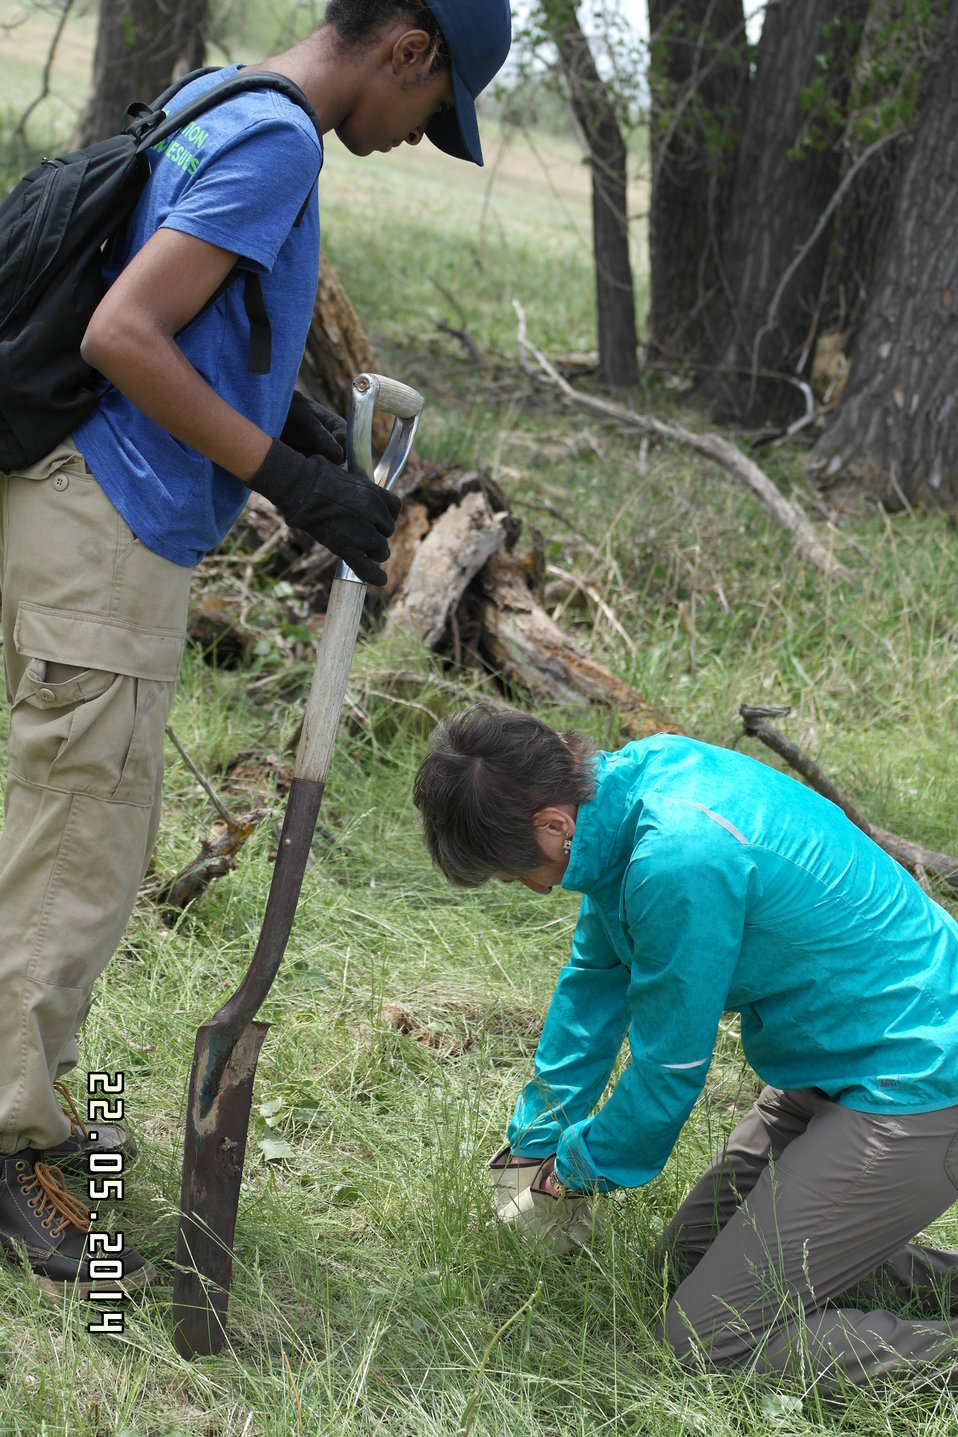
Secretary Jewell Announces $6.7 for Youth Conservation Job

Interior Secretary Sally Jewell helps local youth conservation groups plant cottonwood trees at Rocky Mountain Arsenal National Wildlife Refuge.